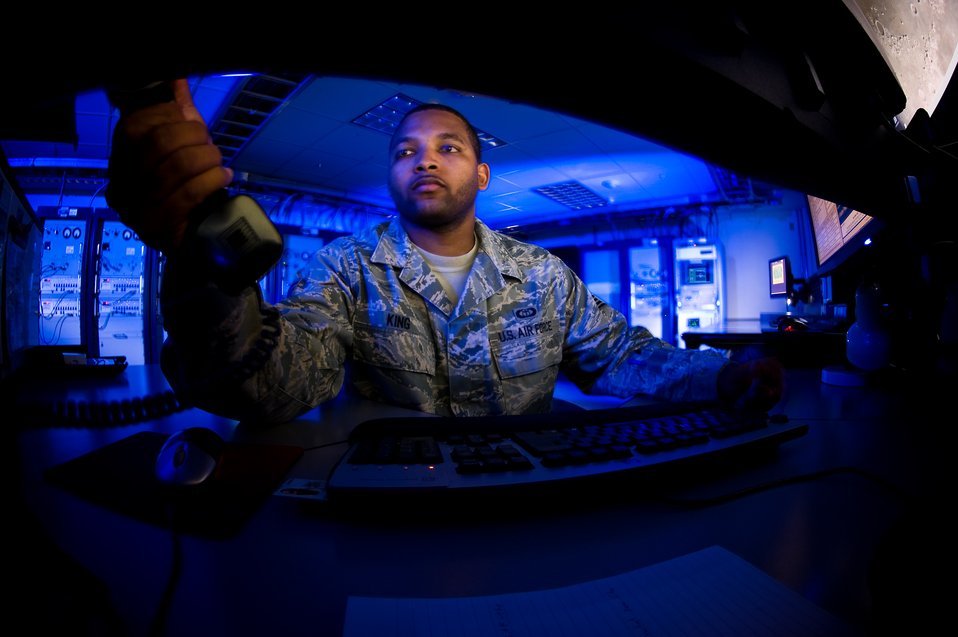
Confirmation needed!

At the Sagamore Hill Solar Observatory in Hamilton, Mass., Staff Sgt. Heath King prepares to call another solar observatory to confirm unusual solar activity as he analyzes data displayed on high-definition monitors Nov. 18, 2009.